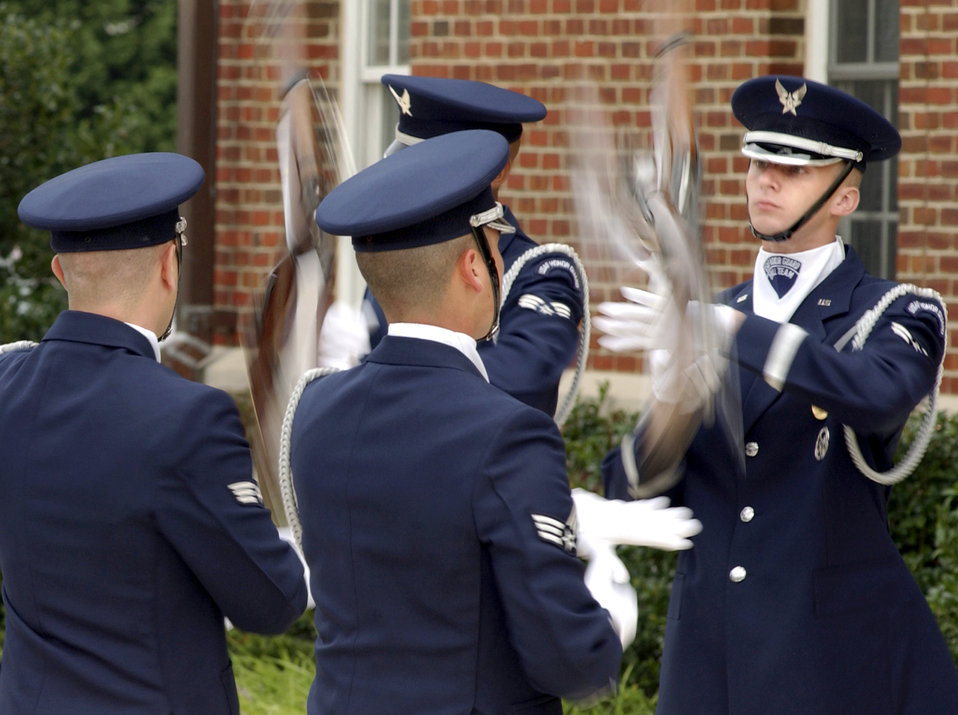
Perfect Precision

BOLLING AIR FORCE BASE, D.C. (AFPN) -- The U.S. Air Force Honor Guard Drill Team demonstrates a 16-man drill during the honor guard's annual alumni picnic here July 24. The honor guard gave demonstrations including a full-honors funeral ceremony, color team presentation and a drill team presentation for alumni 18 to 80 years of age.